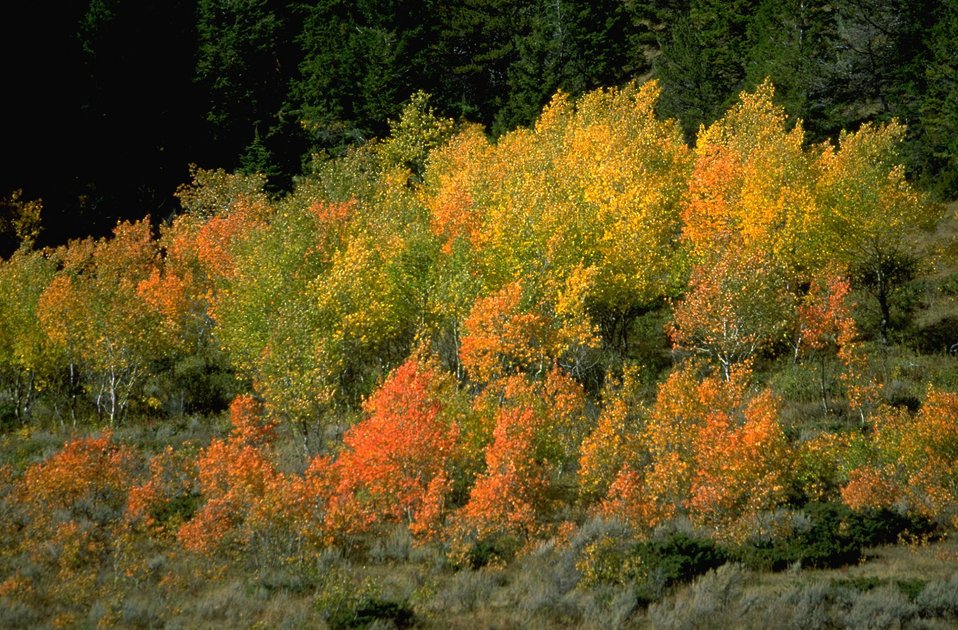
Aspen patch in beautiful autumn colors